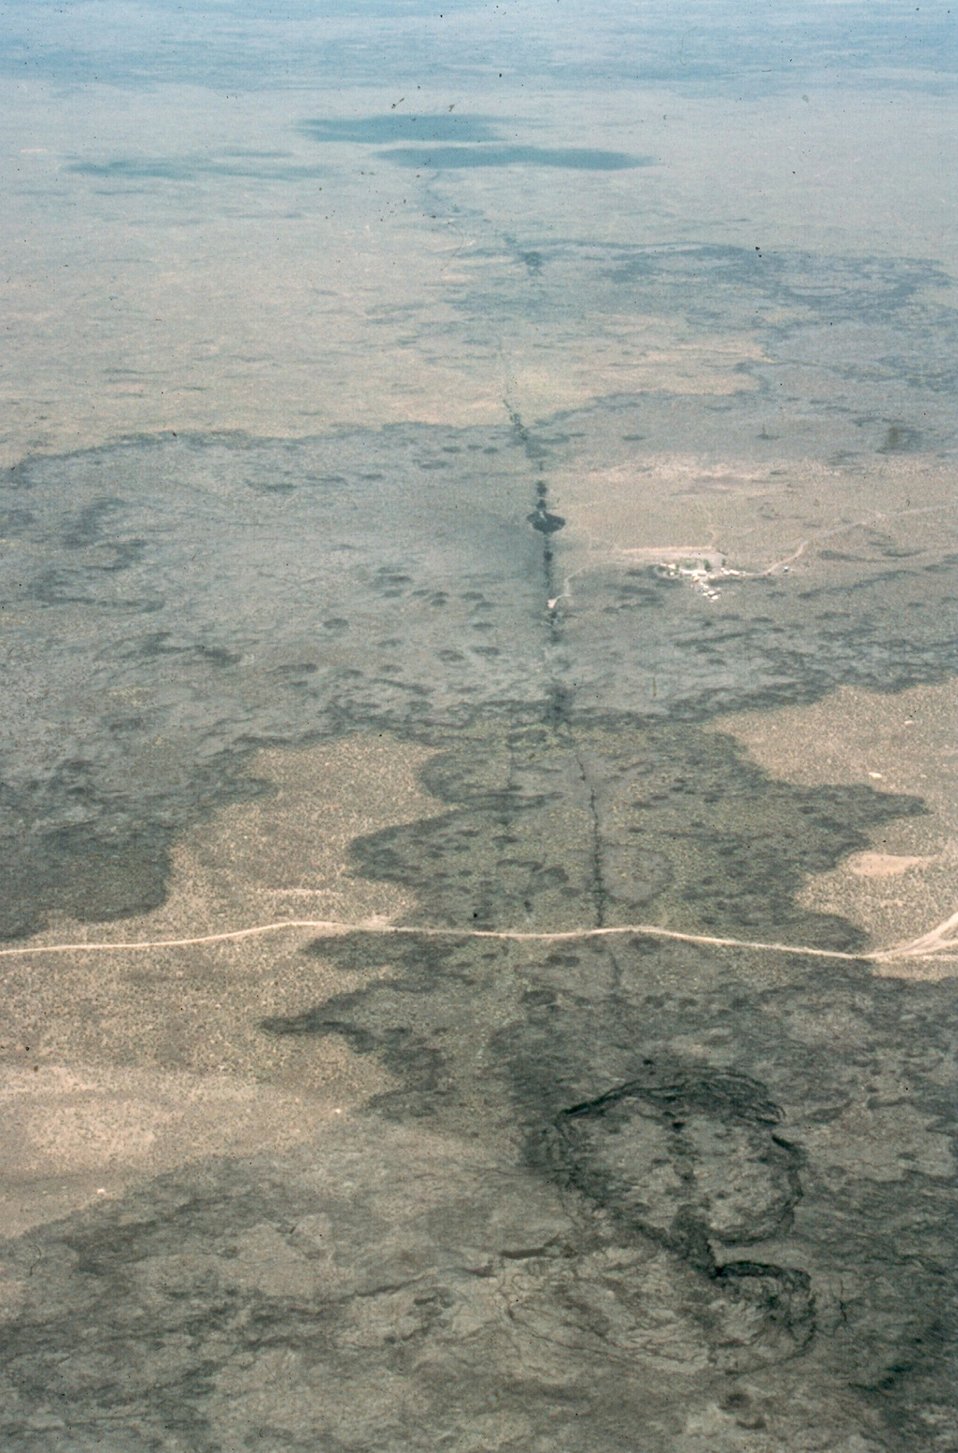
Great Rift Shoshone Field Office USRD Upper Snake River District